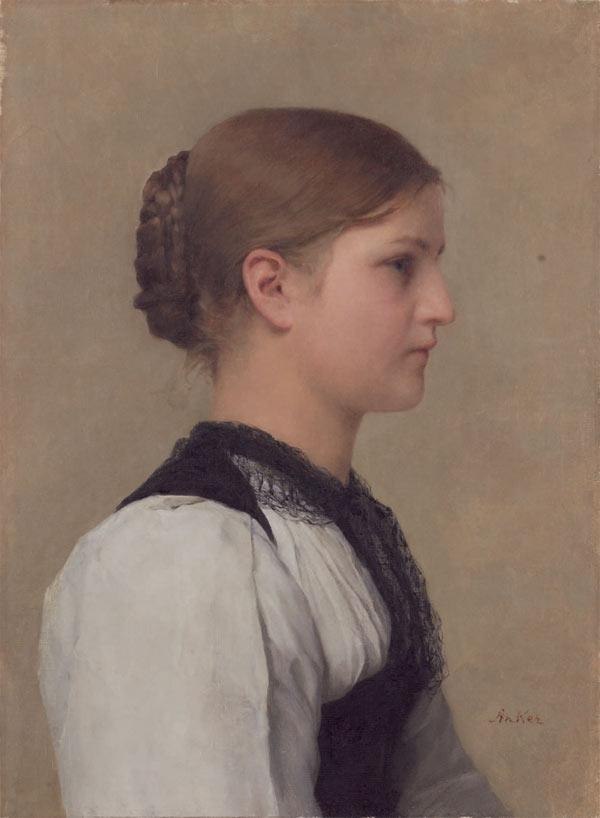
Albert Anker - Brustbild eines Mädchens in Berner Tracht